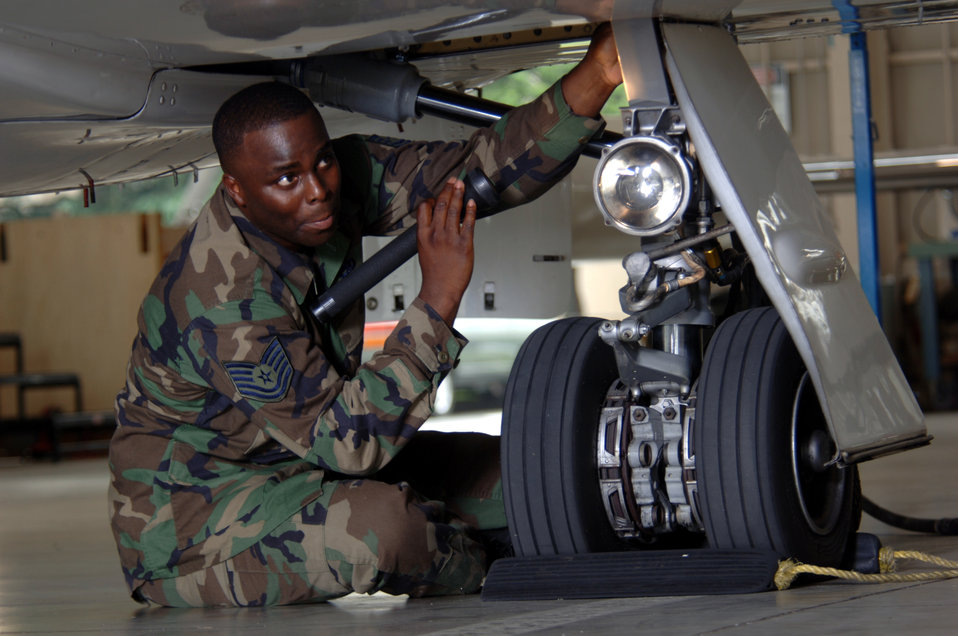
Quality check

YOKOTA AIR BASE, Japan -- Tech. Sgt. Philip Pettaway checks the landing gear on a C-21 aircraft during a quality assurance inspection. Sergeant Pettaway is assigned to the 374th Maintenance Operations Squadron.